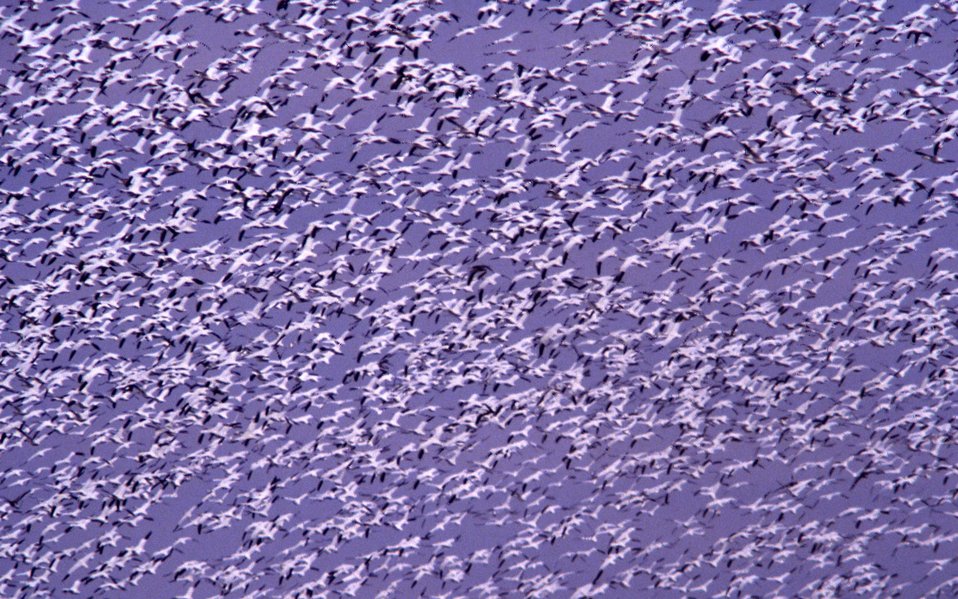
Flock of Snow Geese

Bombay Hook National Wildlife Refuge, DE.